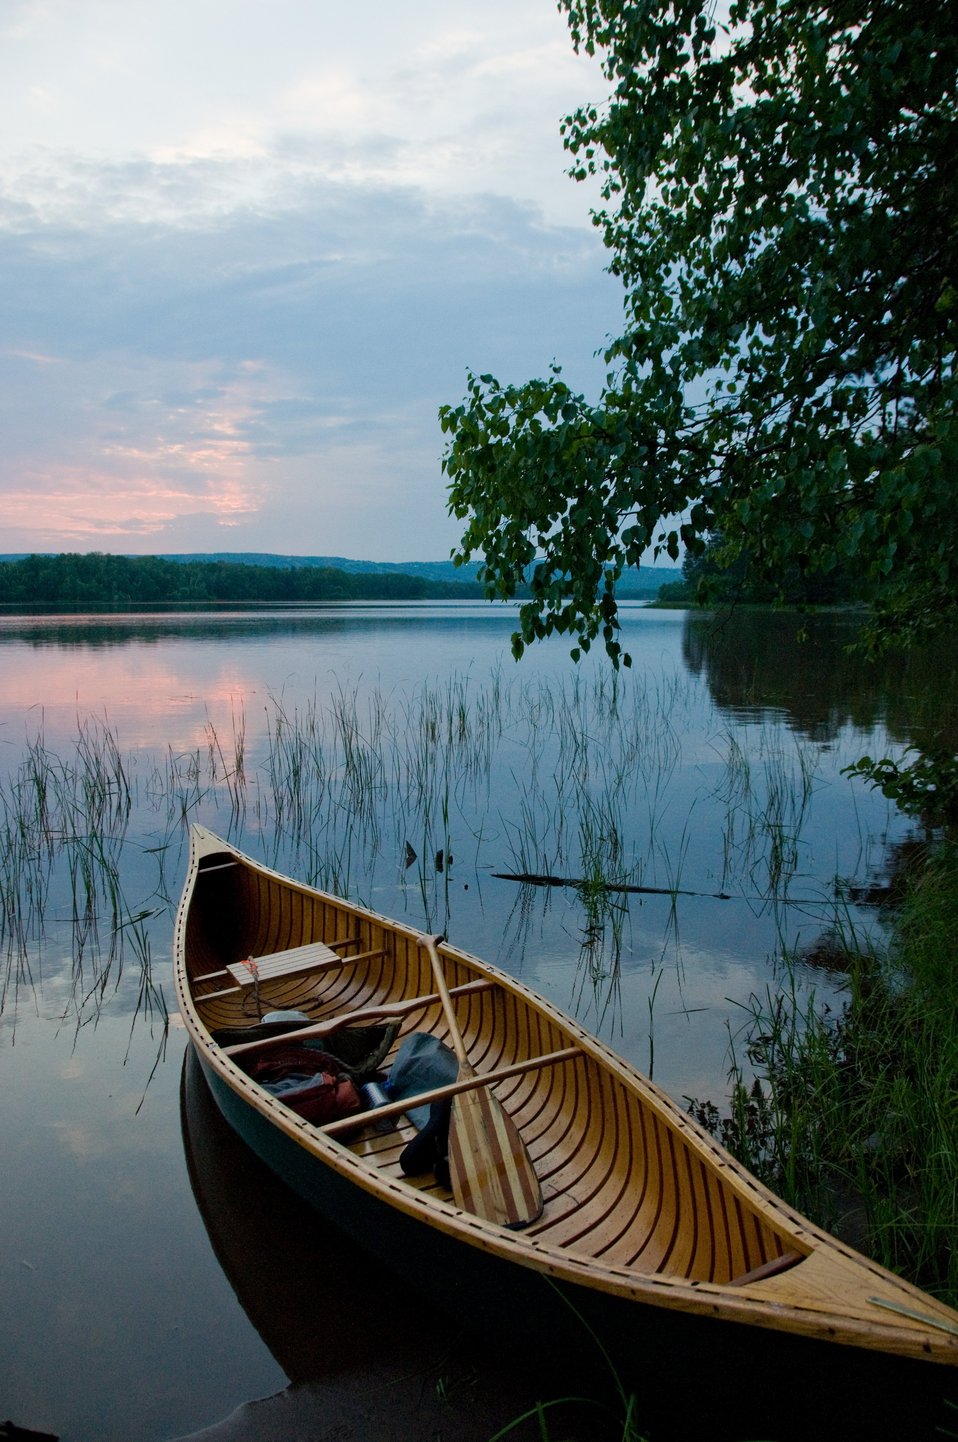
Canoeing in the serene waters of the St. Louis River in Wisconsin is one of the favorite recreational activities in the new Lake Superior National Estuarine Research Reserve, which was officially designated part of the National Estuarine Research Reserve System on October 26, 2010.